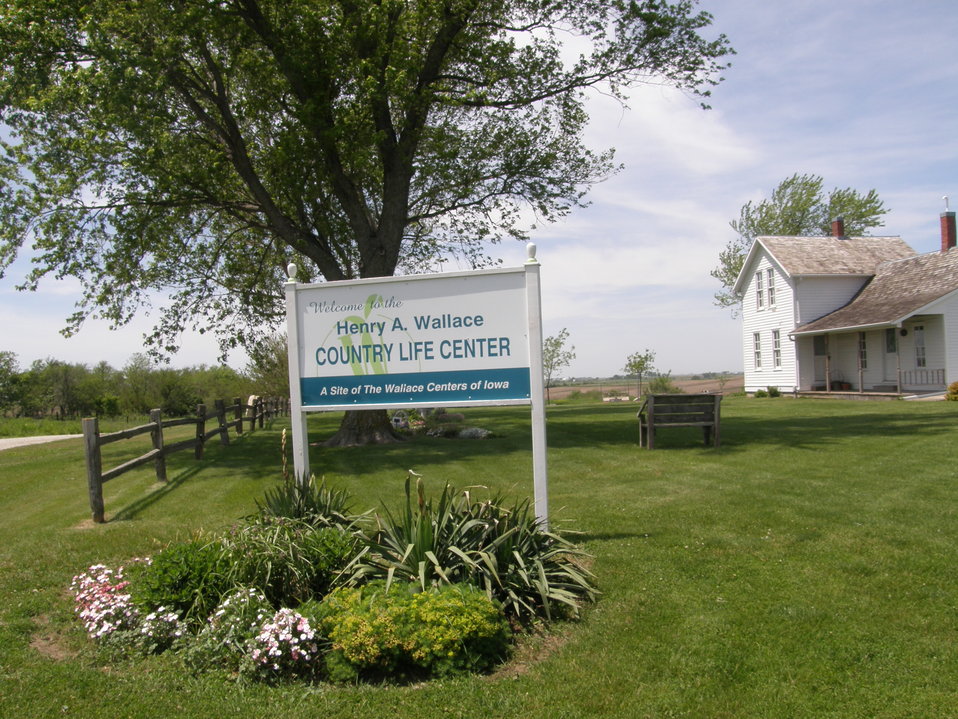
Agriculture Under Secretary for Rural Development Dallas Tonsager visited the birthplace of Agriculture Secretary Henry A. Wallace on Tuesday, May 15, 2012. Today was also the 150th anniversary of the U.S. Department of Agriculture. Wallace, perhaps the most well-known Agriculture Secretary, served from March 4, 1933 until September 4, 1940. He also served as Vice President of the United States from 1941 to 1945 under President Franklin D. Roosevelt and Secretary of Commerce from 1945 to 1946.